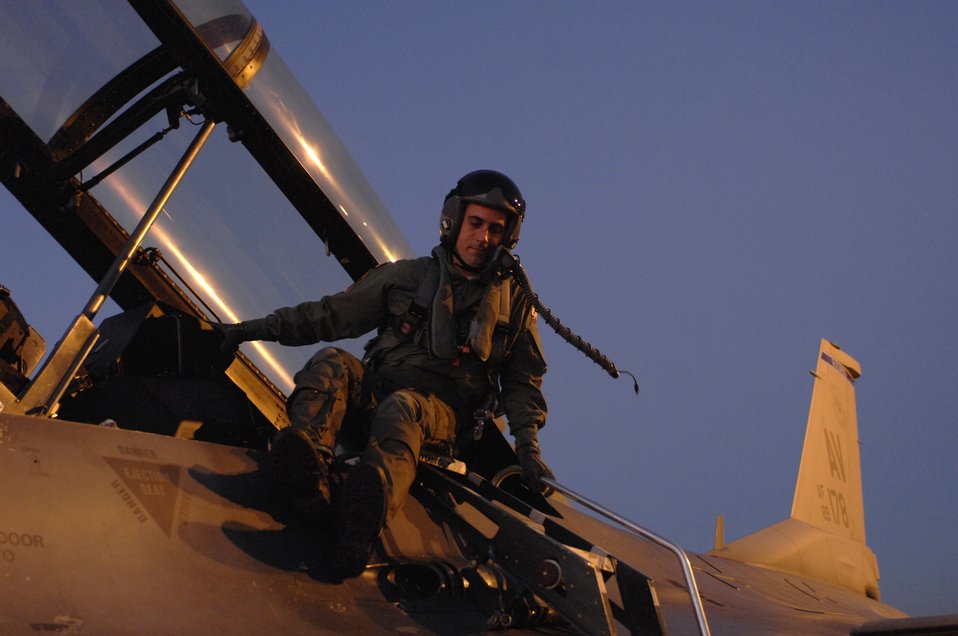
Falcon familiarization

During a familiarization flight of an F-16 Fighting Falcon Dec. 11, Capt. Nenad Milojevic, a member of the Serbian Delegation, visits Aviano Air Base, Italy. The Serbians are here to build a special relationship between Serbia, Italy, and the United States.